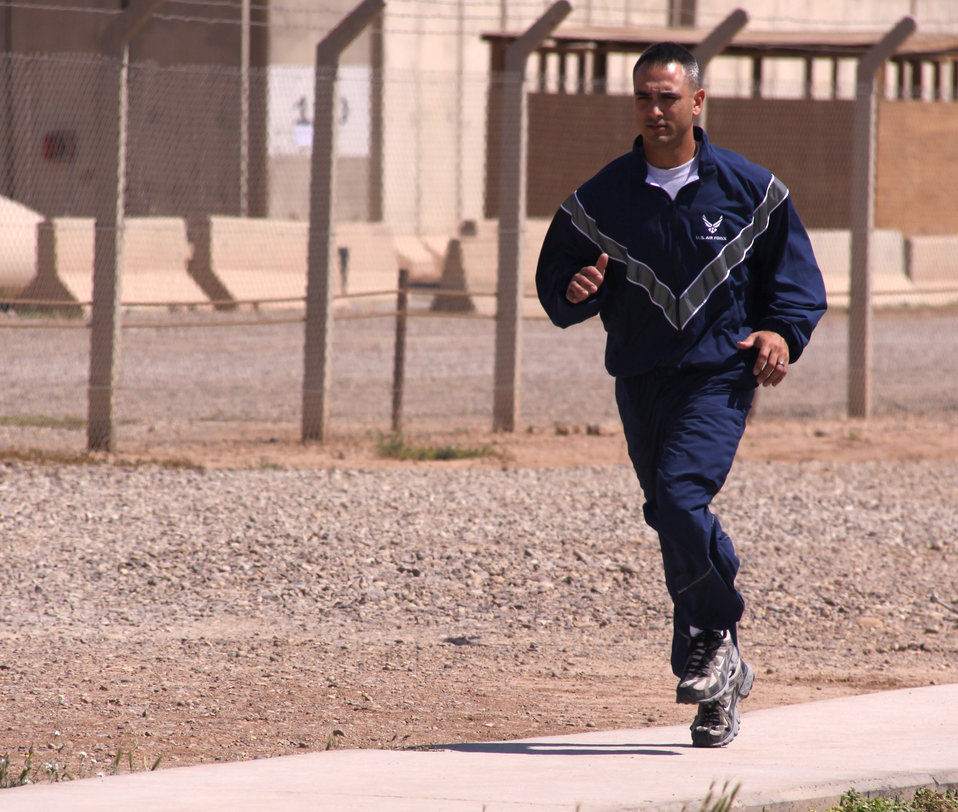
Airman field-tests modified PT uniform in Iraq

Senior Airman James Debiase goes for a run to try out the Air Force's modified physical training uniform under consideration to replace the current PT uniform April 13 at Joint Base Balad, Iraq. Airman Debiase was selected to field-test the PT uniform while deployed here from Dyess Air Force Base, Texas, and to provide feedback to leadership at the end of April. Airman Debiase is a 332nd Expeditionary Civil Engineer Squadron emergency manager, and his hometown is Glastonbury, Conn.